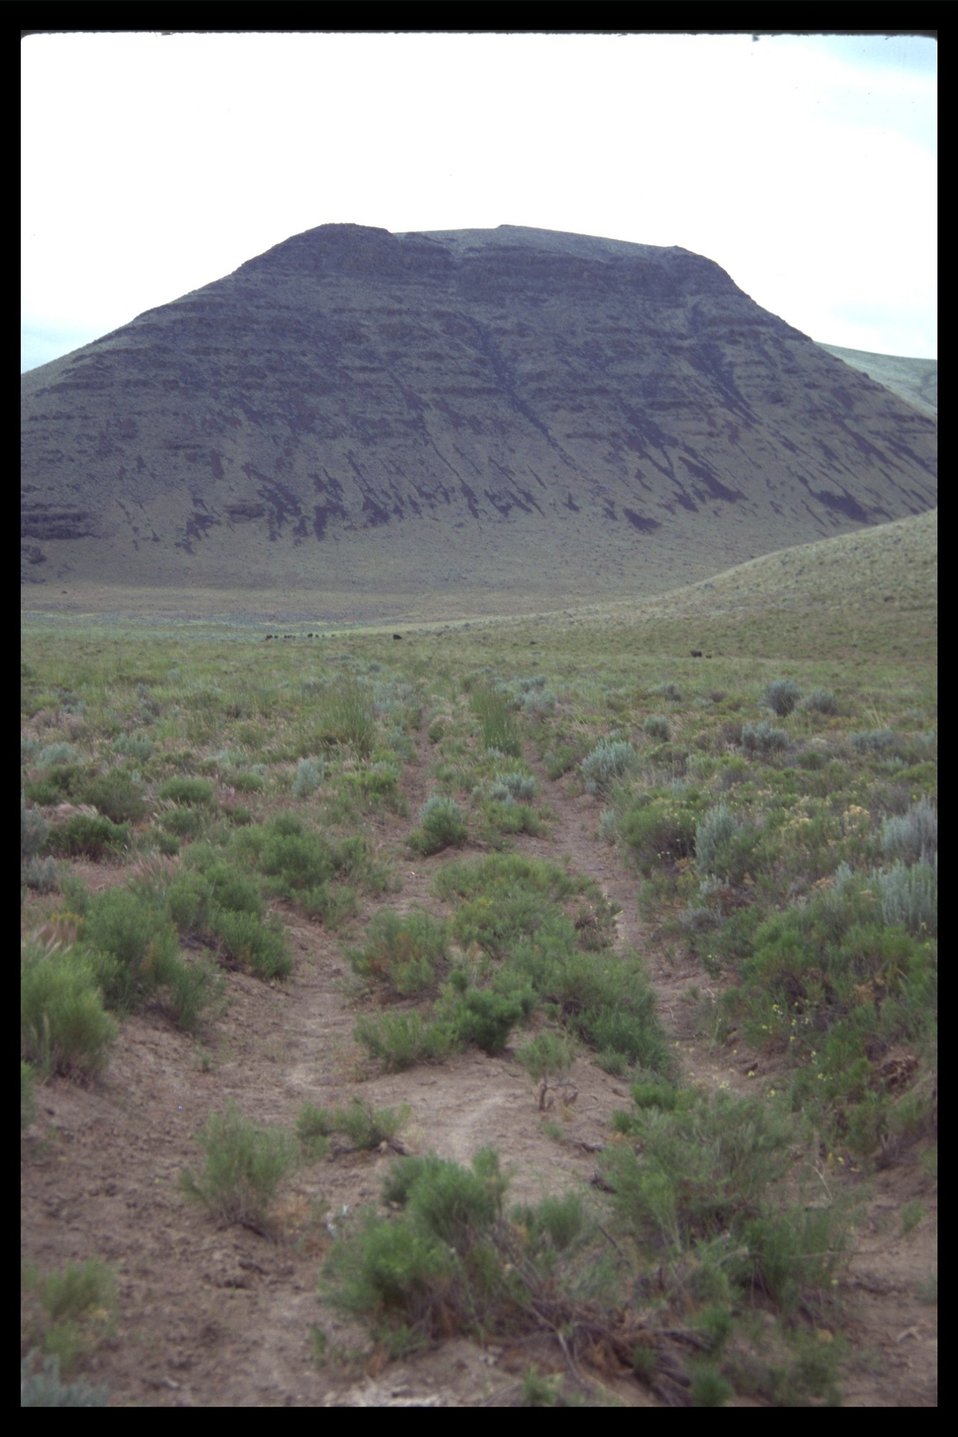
Road going toward Sheepshead Mountain in Sheepshead Mountain WSA. (2-72C)